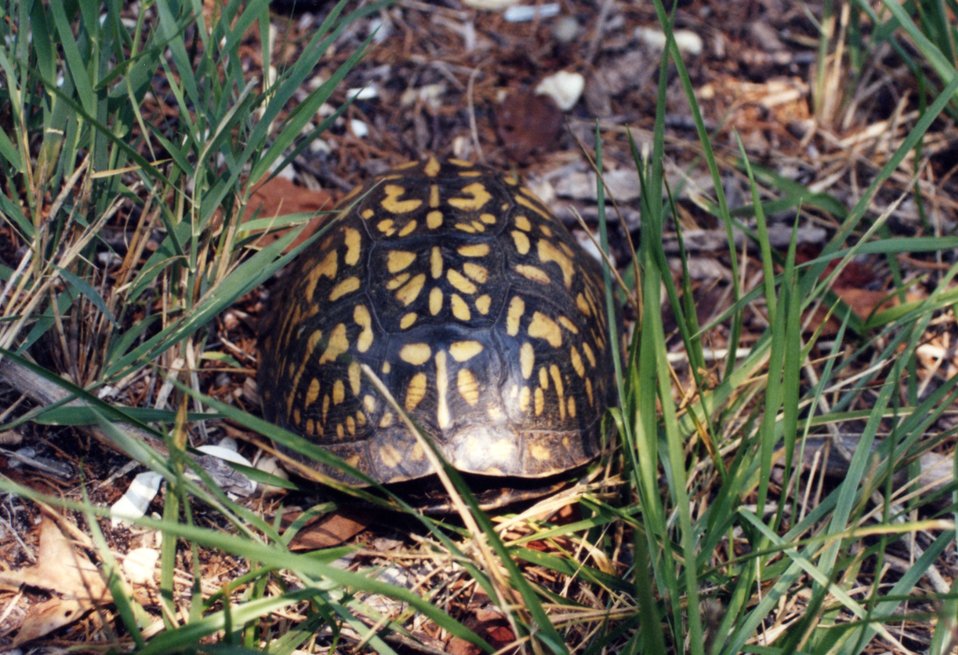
Box turtle.